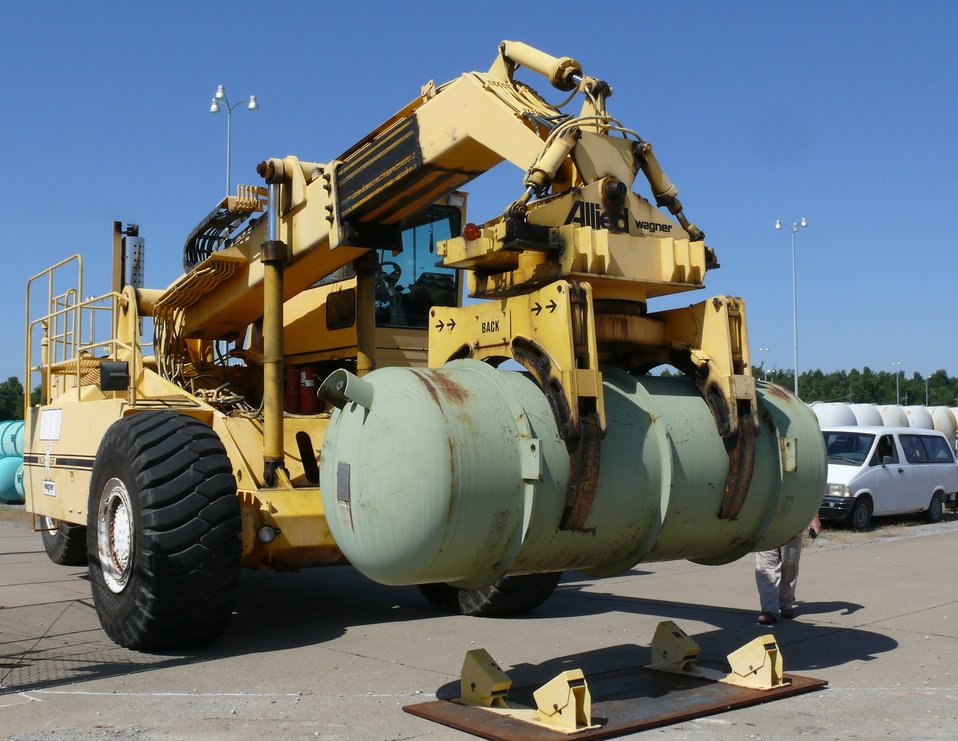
Re-enrichment agreement at Paducah

This cylinder hauler at Paducah’s Babcock & Wilcox Conversion Services plant delivers the first of DOE’s 14-ton depleted uranium cylinders to USEC for re-enrichment as part of a five-party agreement that is extending enrichment operations at the 60-year-old plant for another year, delaying increased costs at the site for DOE.